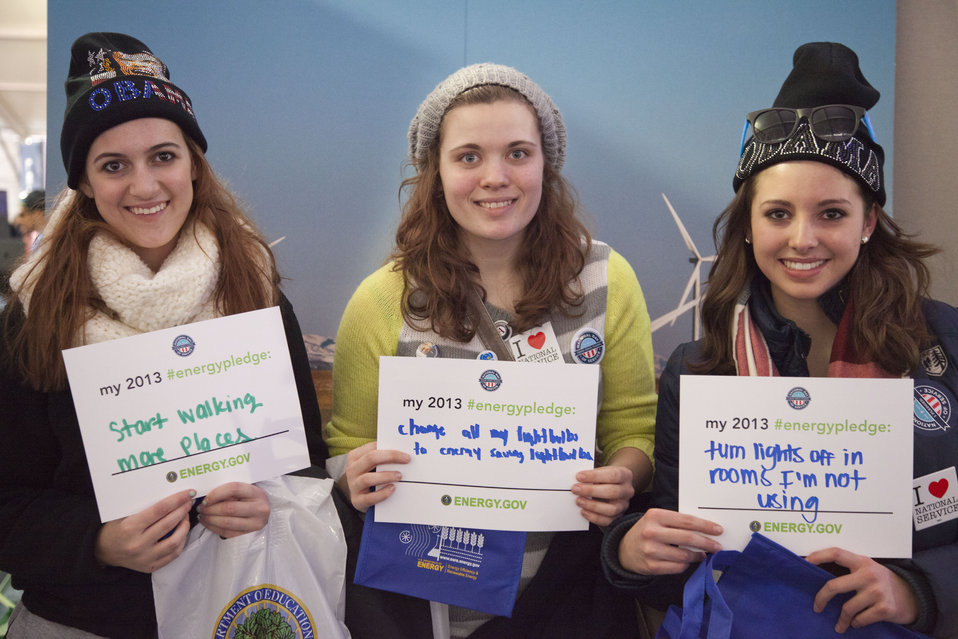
What's your #energypledge?